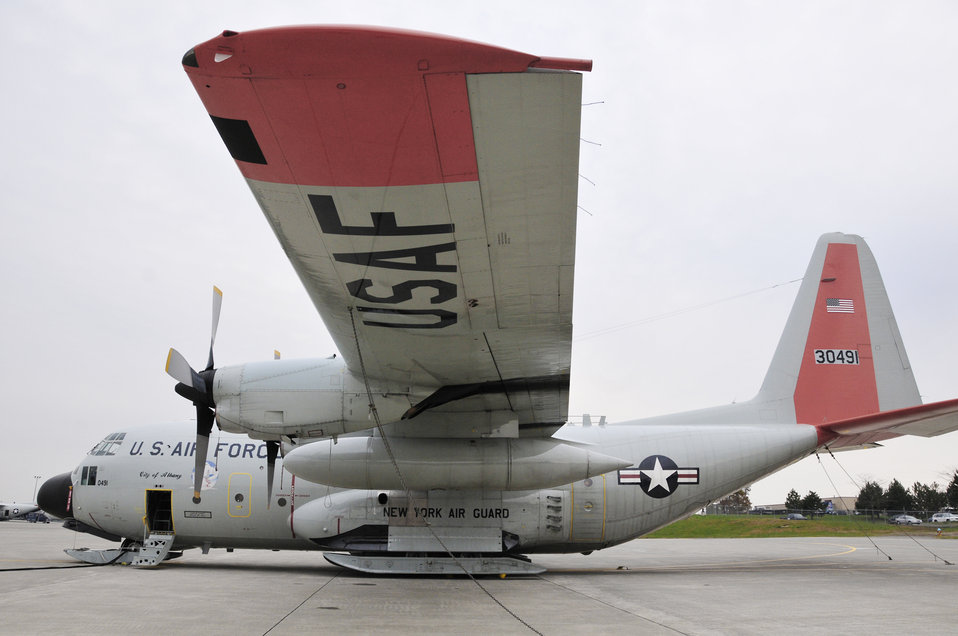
Ready for snow

A ski-equipped LC-130 Hercules finishes final preparation in New York, Oct. 21, 2009, before making the 11.000-mile journey to Antarctica in support of the U. S. Antarctica Program. The aircraft and crew are from the New York Air National Guard's 109th Airlift Wing located in Schenectady.